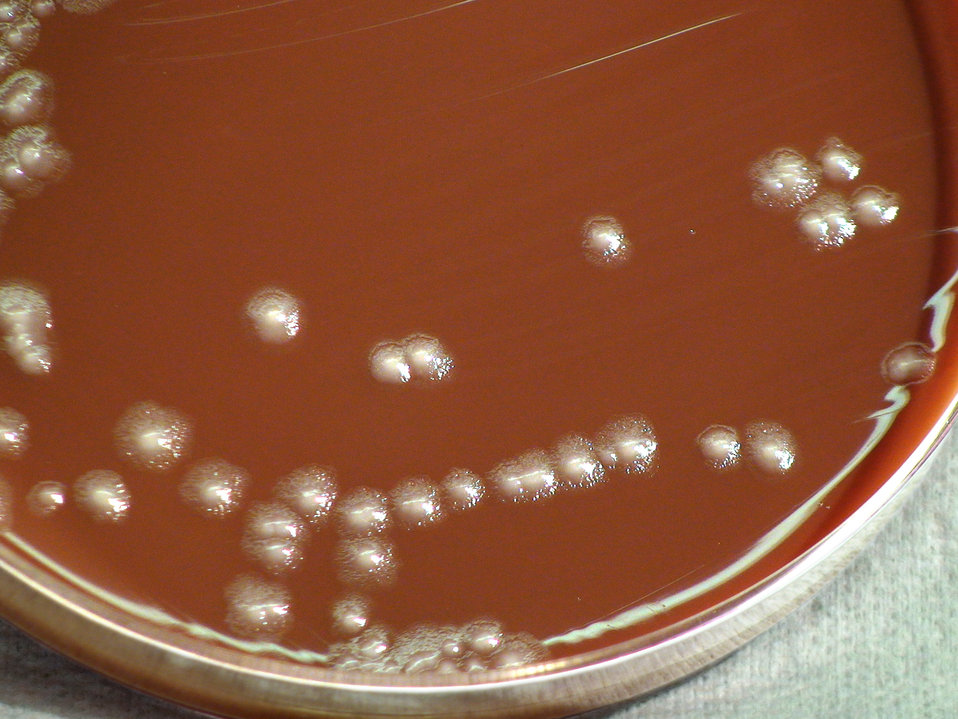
As a closer view of PHIL 12469, this photograph depicts the colonial morphology displayed by Gram-negative Yersinia pestis bacteria, which was grown on a medium of chocolate agar, for a 72 hour time period, at a temperature of 25�C. See also PHIL 12468 for the appearance of Y. pestis colonies grown on the same medium, and at the same time temperature, but for a lesser time period (48hr); PHIL 12471 displaying growth on the same medium, but for a lesser time period (48hr), and at a greater temperature (37�C); PHIL 12472 displaying growth on the same medium, for the same amount of time, but at a greater temperature (37�C); PHIL 12473 displaying Y. pestis colonies grown on the same medium and temperature, but at one-third the time (24hr).